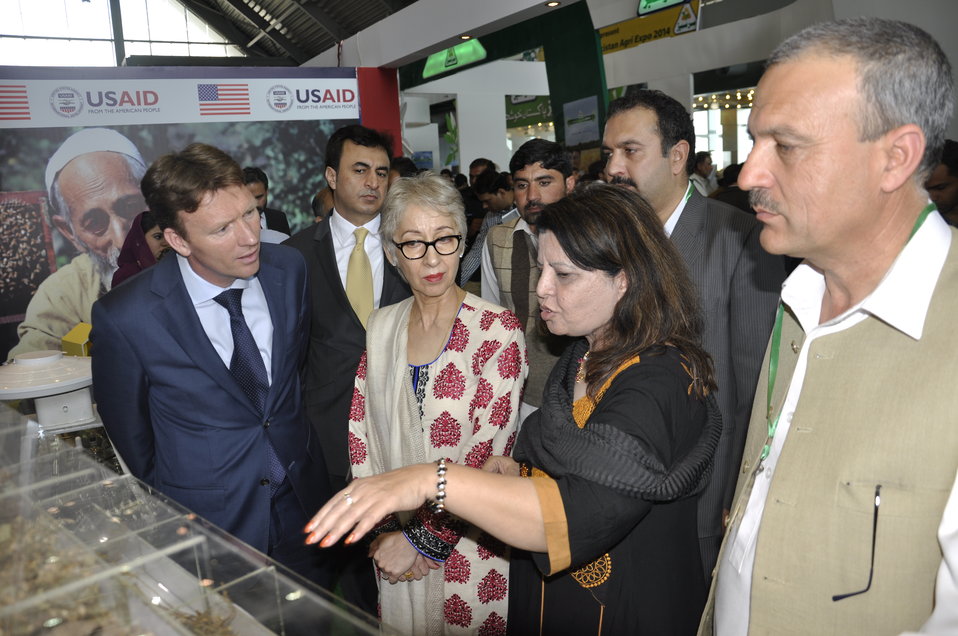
Ambassador of The Netherlands, Mr. Marcel de Vink interacting with the team of USAID's Entrepreneurs Project at Dawn Sarsabz Pakistan Agri Expo.